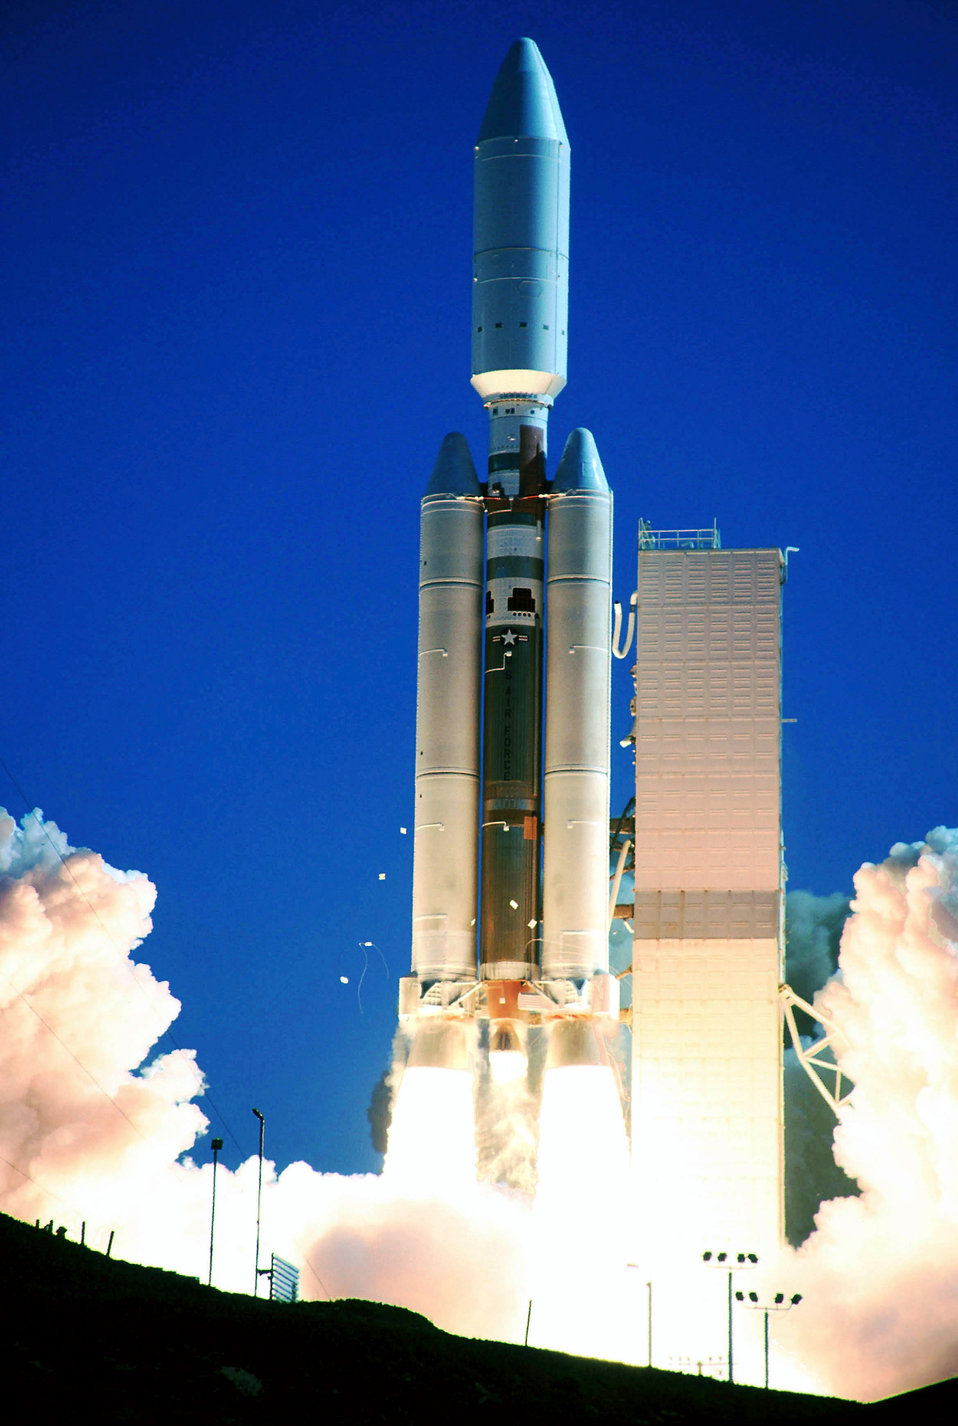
Titan IV-B launch

FILE PHOTO -- The Titan IV-B is the most recent and largest unmanned space booster used by the Air Force. It provides assured capability for launch of space shuttle-class payloads. The vehicle is flexible because it can be launched with no upper stage, or one of two optional upper stages for greater and varied carrying ability.